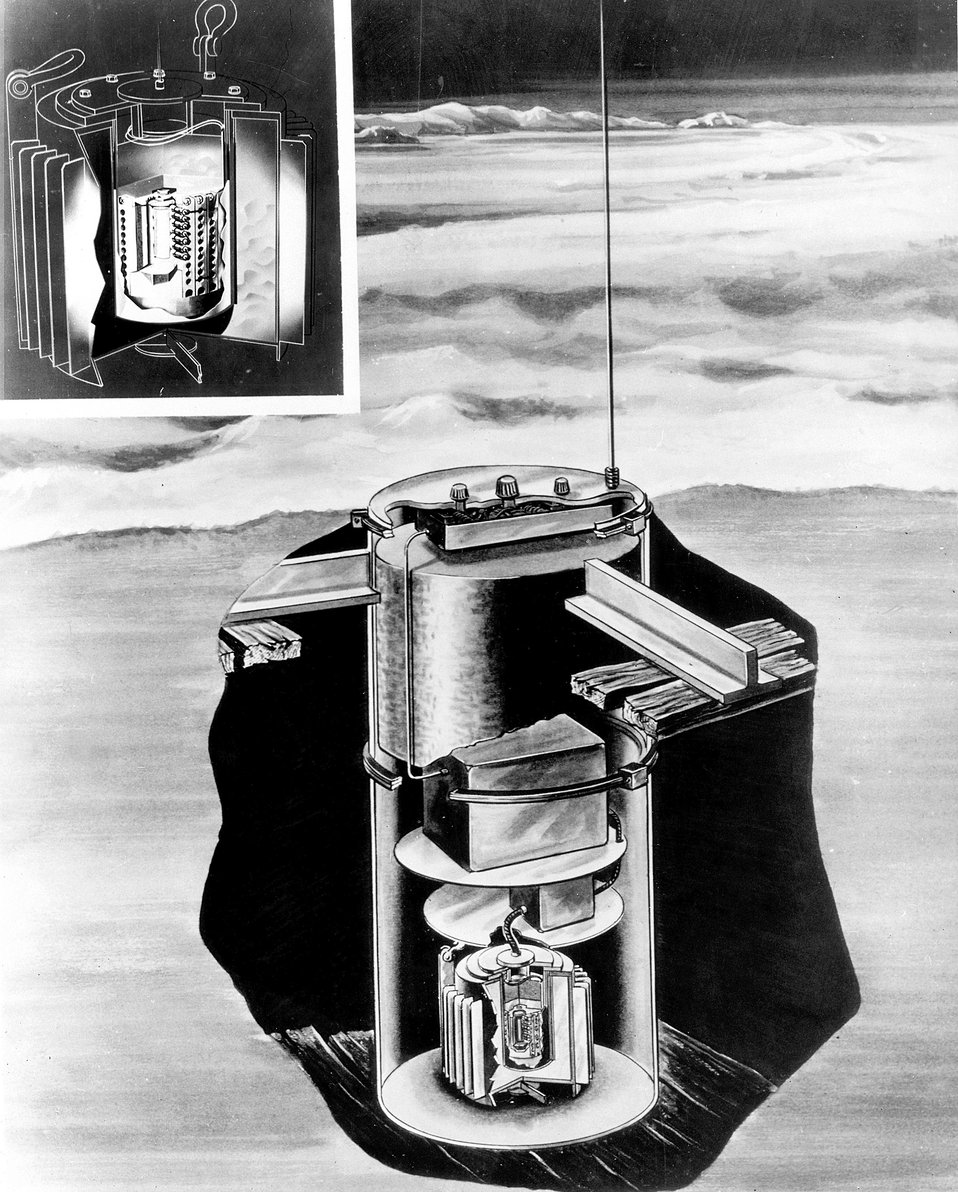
Artist's drawing of Navy automatic, unmanned weather station at the Little America V base in the Antarctic which is being powered by an atomic generator(shown in the inset-upper left hand corner).